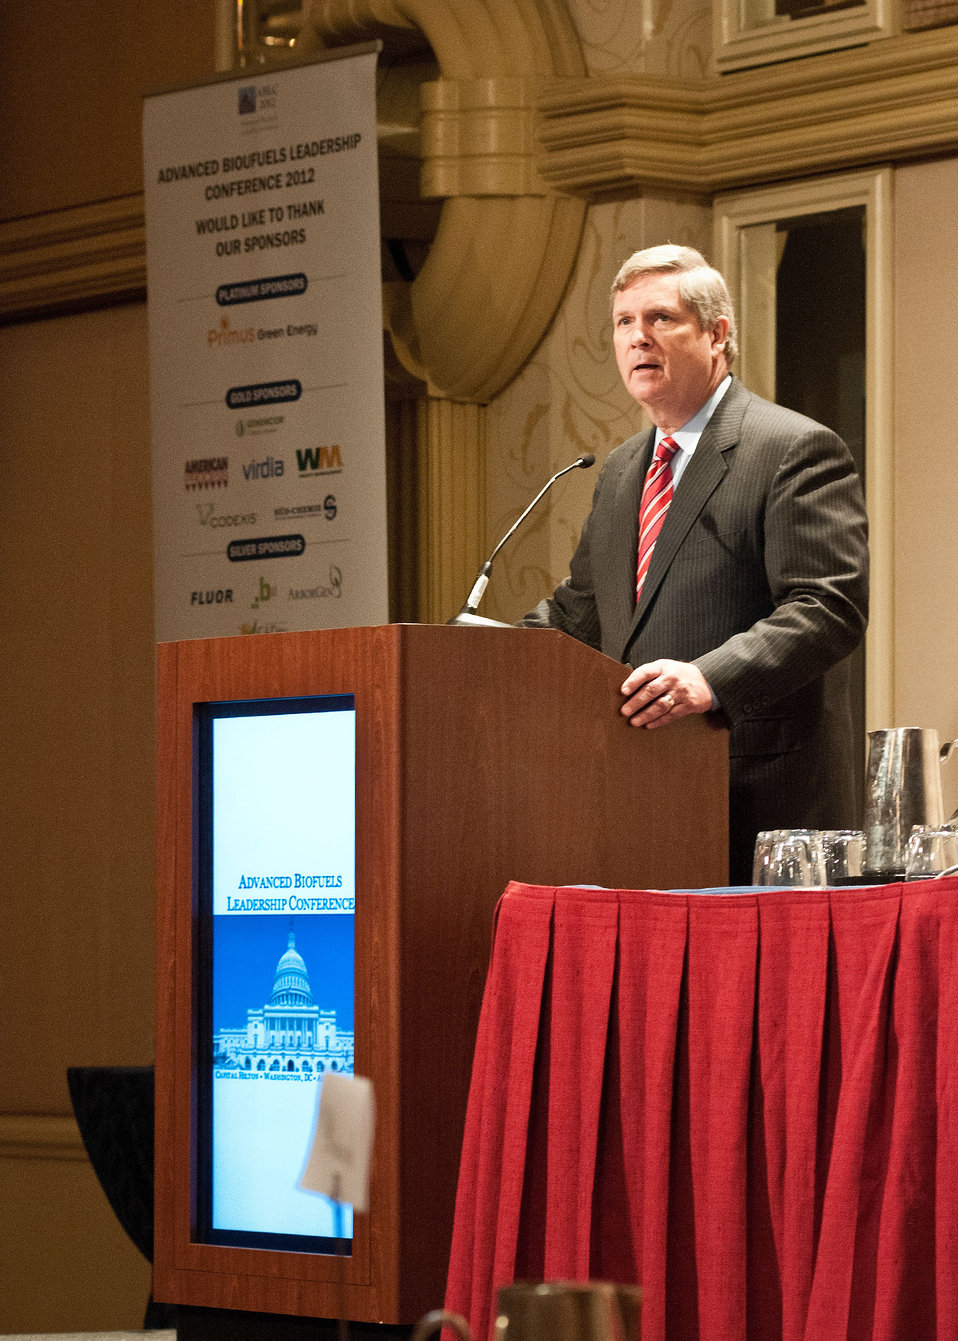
Agriculture Secretary Tom Vilsack was the keynote speaker at the Advanced Biofuels Leadership Conference to highlight the Obama Administration’s “all of the above” approach to energy in America – including renewable energy at the Capital Hilton Hotel in Washington, D.C., on Tuesday, April 3, 2012. Secretary Vilsack spoke of the economic benefits to rural America, reduced foreign oil consumption and job production. The theme of the conference was, “Go Big, Stay Strong.” As advanced biofuels move from the lab and compete for commercialization, stakeholders are strongly investing while balancing the need to stay in an uncertain policy and financial environment. At ABLC, networks are formed, relationships are developed, and decisions are made with people in a position to make a difference and those who make decisions.